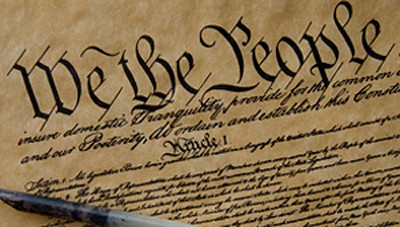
DOD to observe Constitution Day, Citizenship Day on Sept. 17

The Department of Defense observes Constitution Day and Citizenship Day Sept. 17 to commemorate the signing of the U.S. Constitution in Philadelphia on that day in 1787.